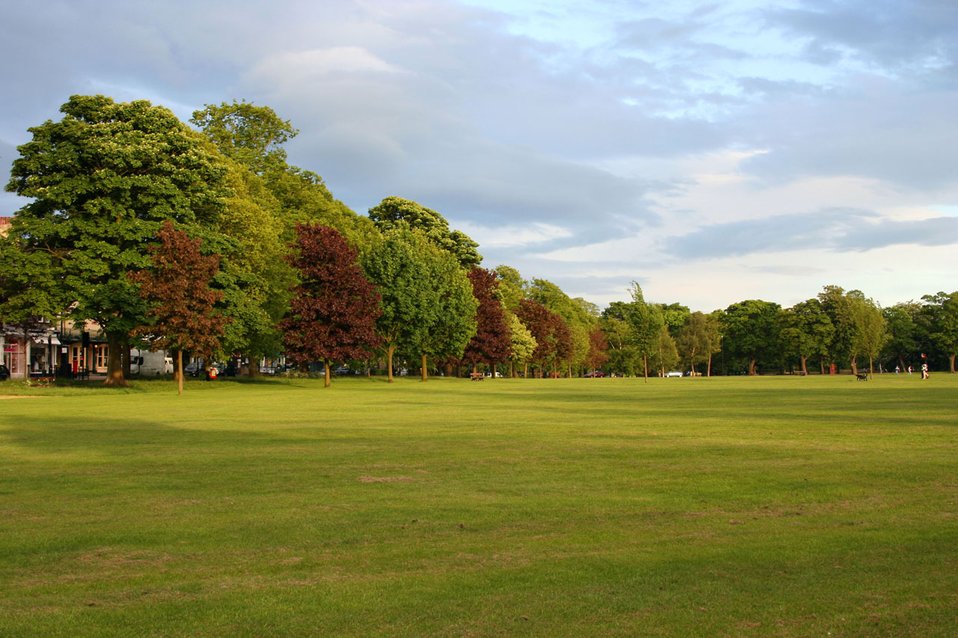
Autumn in park

Park in autumn colours.